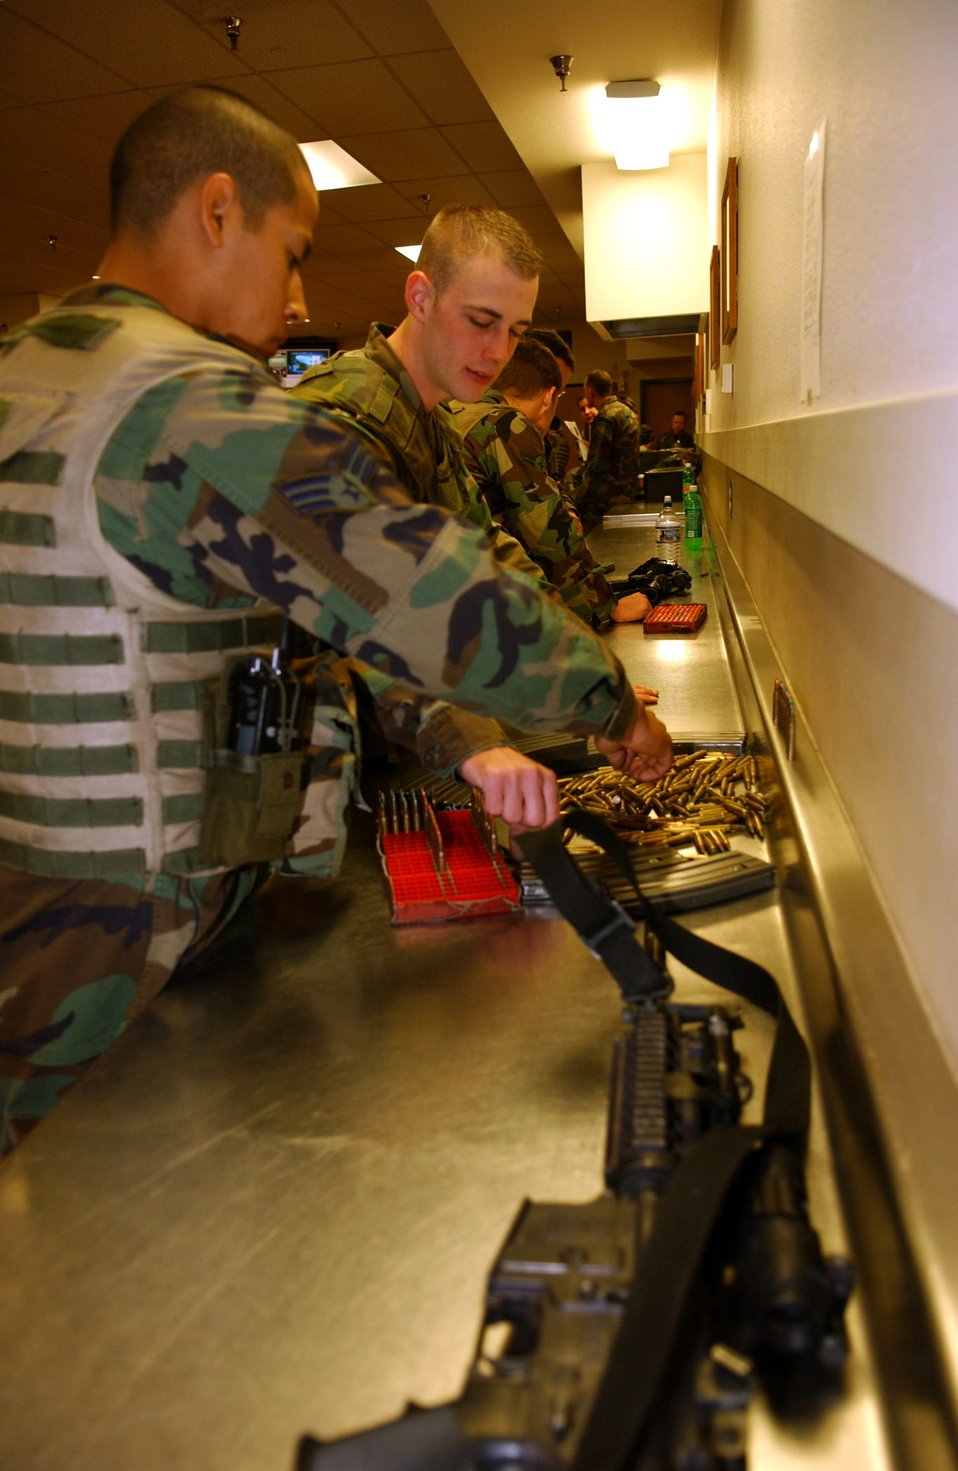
Shift change

Senior Airman Jorge Rodriguez (left) and Airman 1st Class Dan Raschke block their ammunition after their shift on Friday, April 21, 2006, at Minot Air Force Base, N.D. This procedure ensures all ammunition is accounted for before being turned in. Both Airmen are with the 5th Security Forces Squadron.